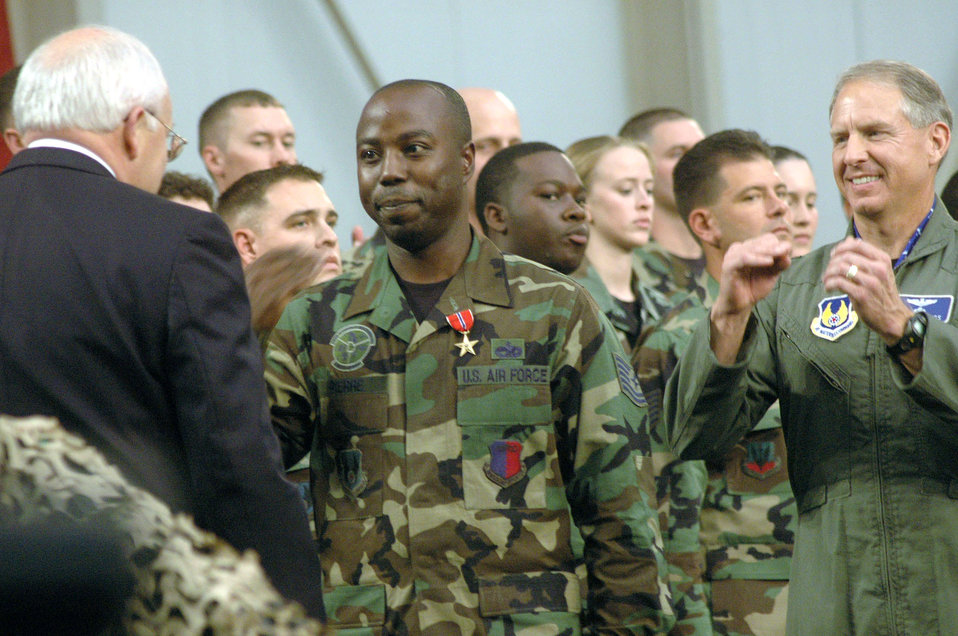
Cheney visits Robins

WASHINGTON (AFPN) -- Vice President Dick Cheney awards the Bronze Star medal to Tech. Sgt. Jason Pierre, 78th Logistics Readiness Squadron at Robins Air Force Base, Ga.